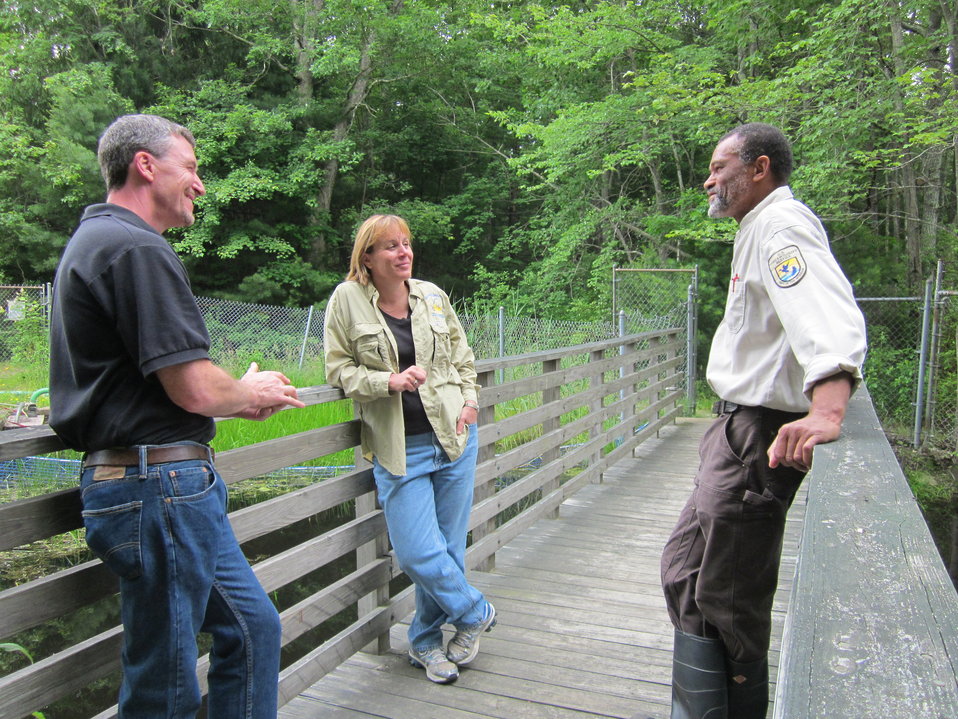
Northeast fish management leaders

North Attleboro, MA, June 2012: Bill Archambault, Deputy Assistant Regional Director for Fisheries (left), meets with Deputy Regional Director Deborah Rocque and North Attleboro National Fish Hatchery Larry Lofton at the hatchery in Eastern Massachusetts.